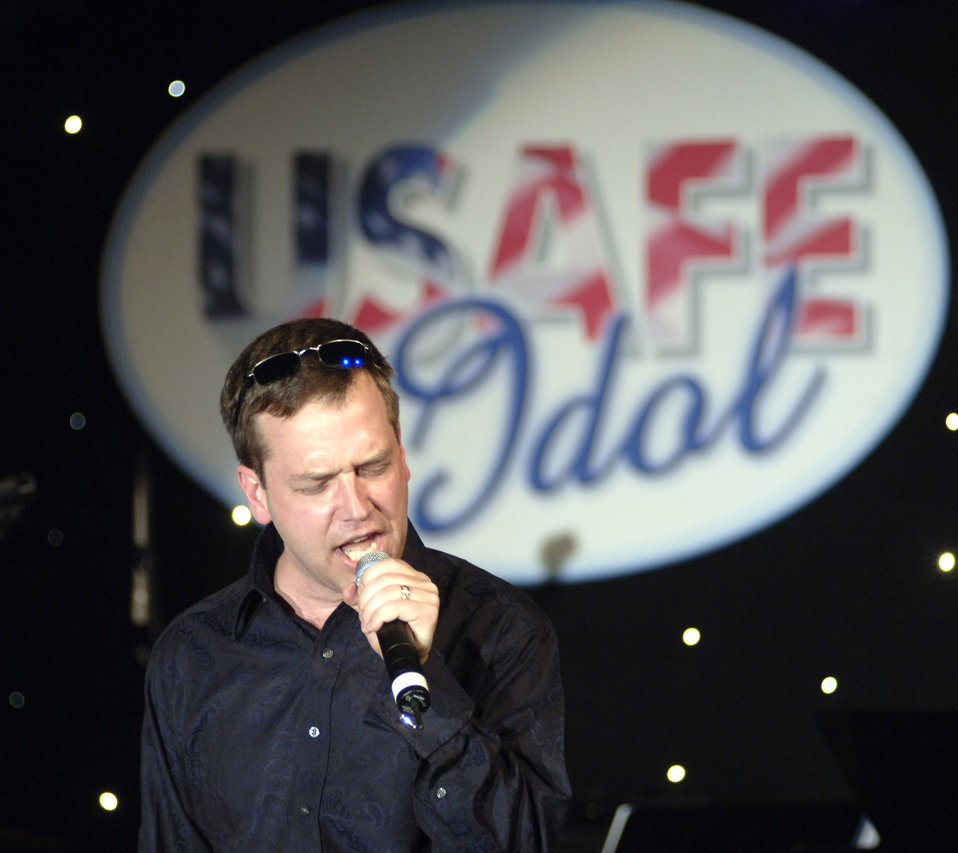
'USAFE Idol'

Maj. Larry Speer opens United States Air Forces in Europe's